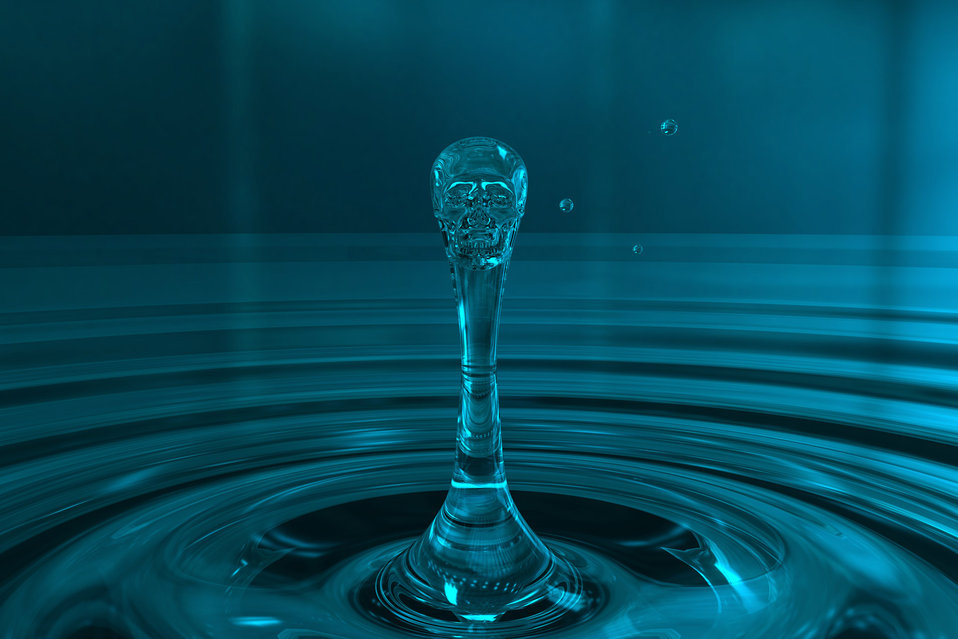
Born out of the water

The appearance of a human skull from a drop of water.